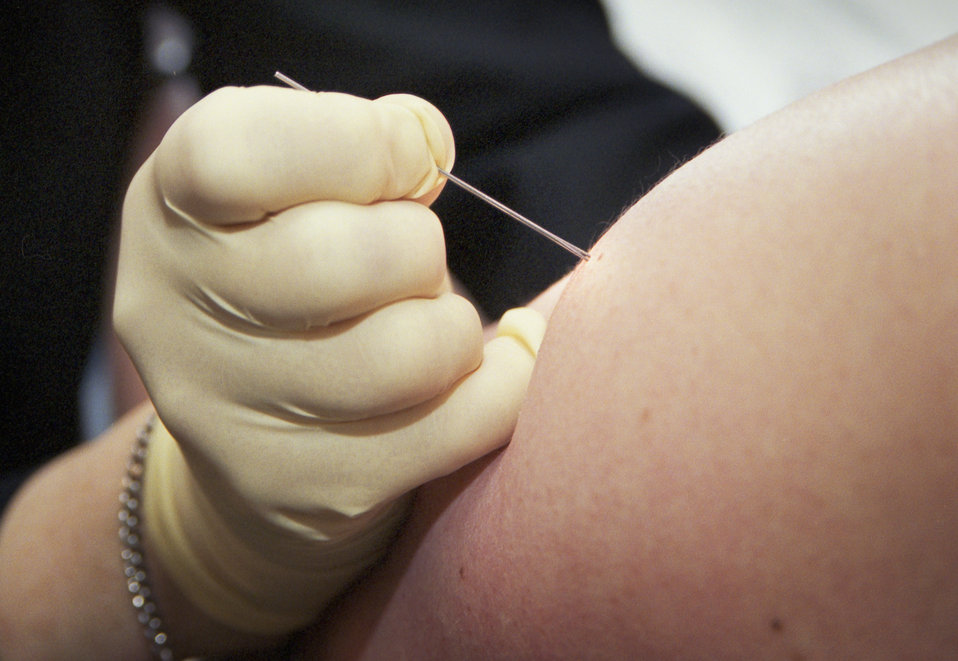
CDC Clinician demonstrates the use of a bifurcated needle during the 2002 Smallpox Vaccinator Workshop.